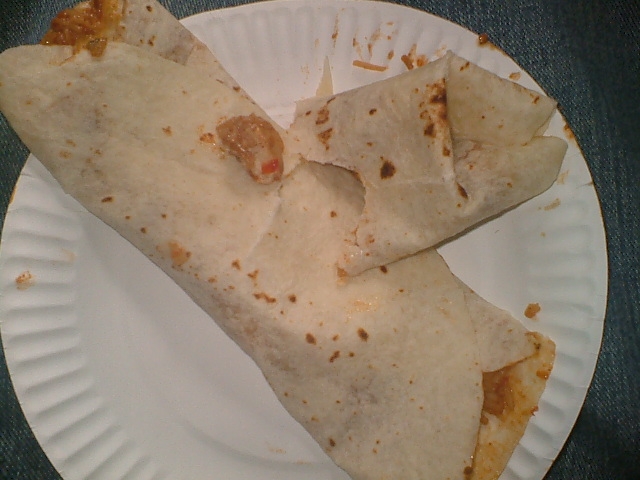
A en:burrito prepared, eaten and photographed by me.